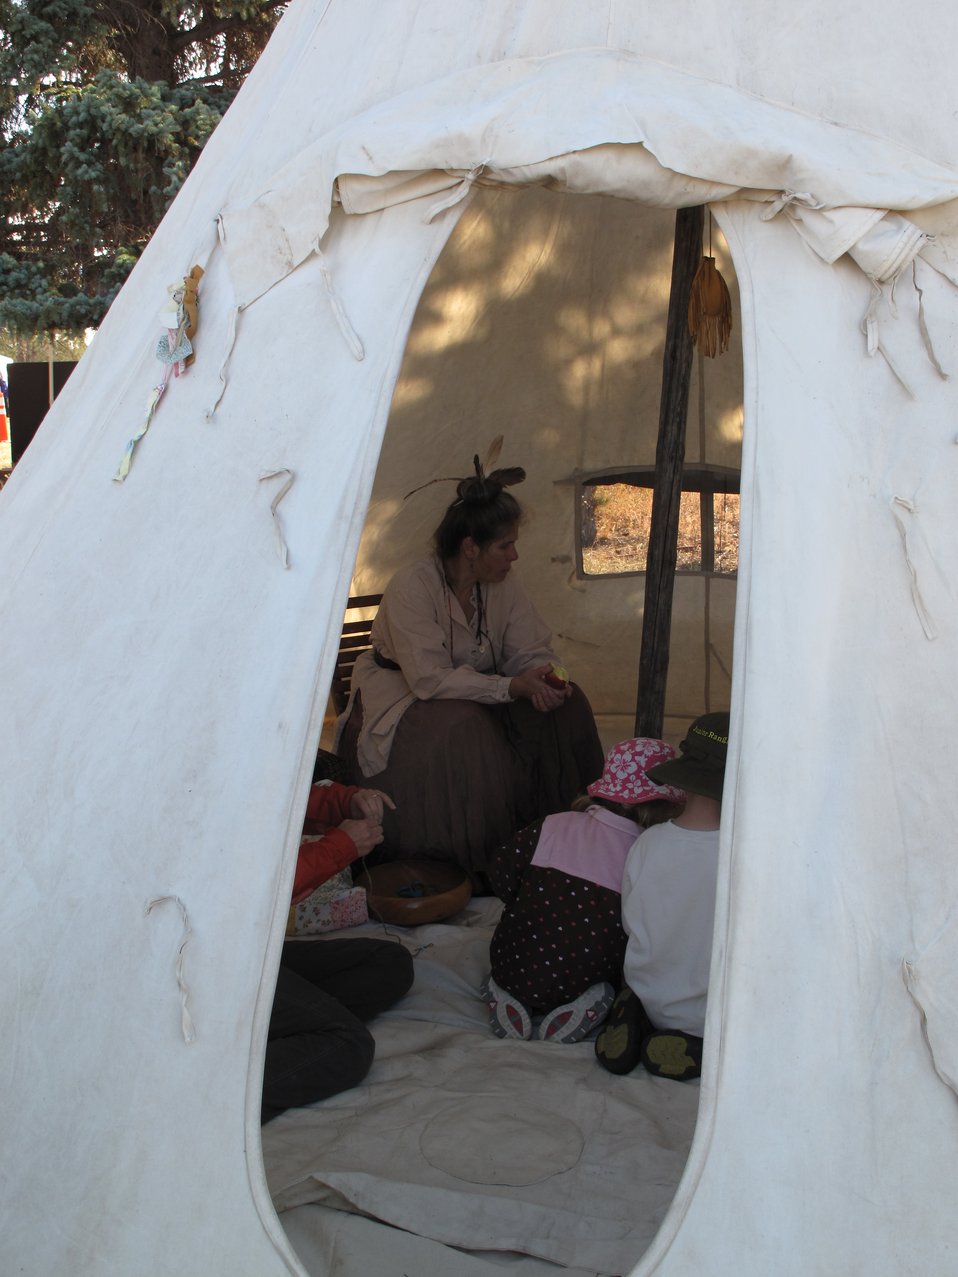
Teepee

A teepee from colonial days.